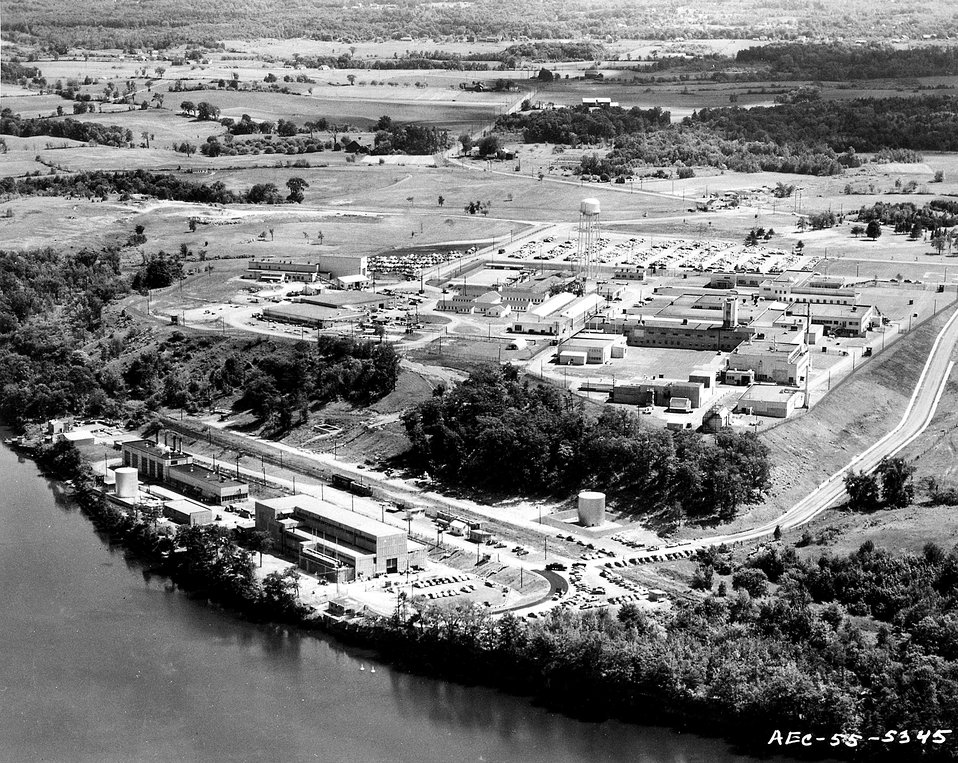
Aerial view of the Knolls Atomic Power Laboratory looking from the Mohawk river. Circa 1955.